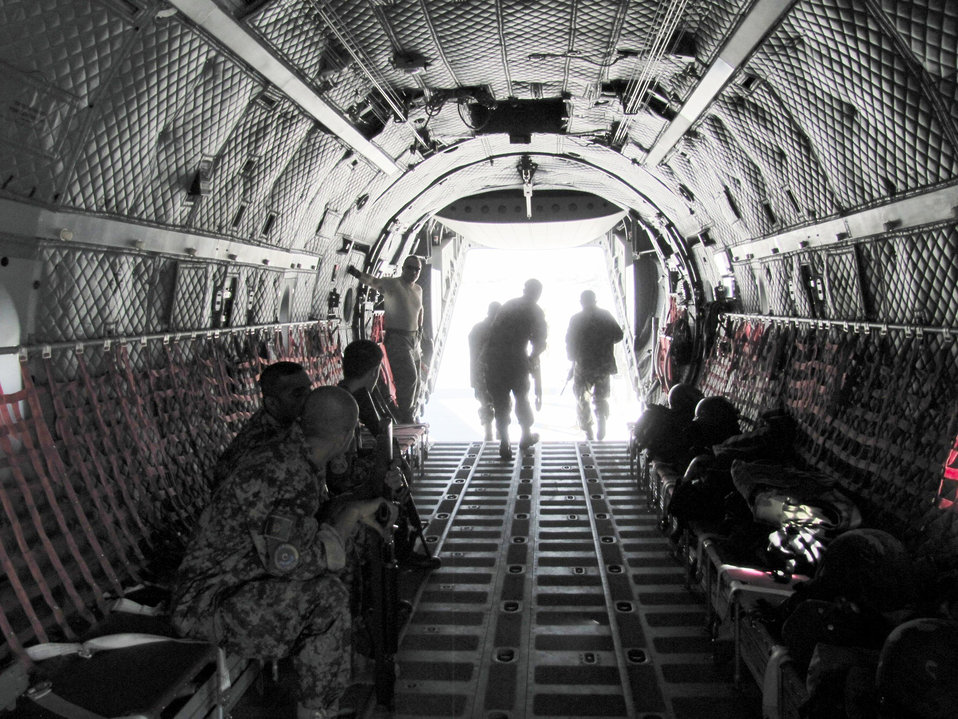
Afghan air force members attend fly-away security team training

Afghan air force security forces members practice fly away security drill on the C-27 Spartan on Sept 26, 2010.